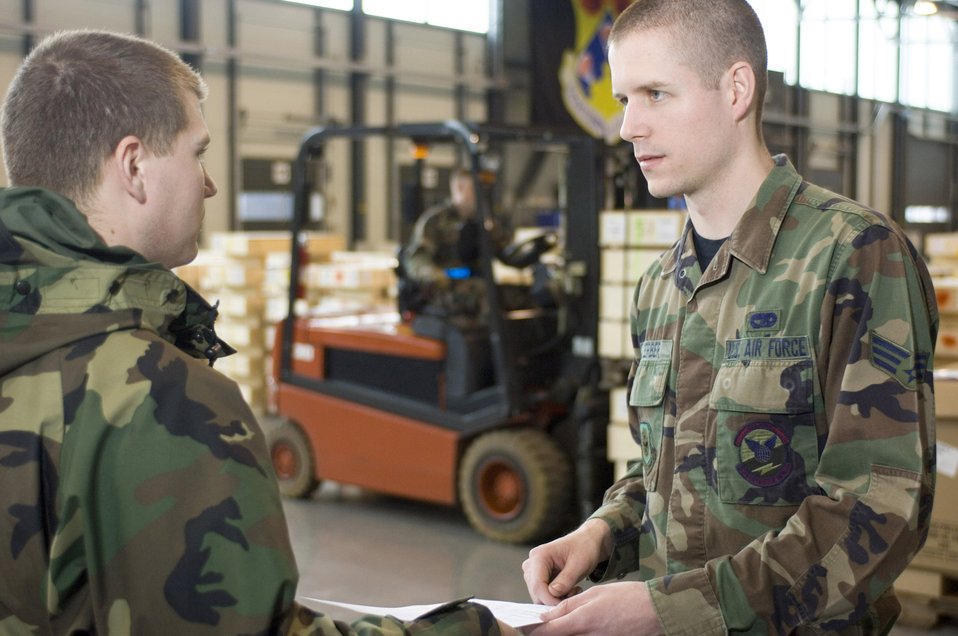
Ramstein airlift mission at full speed

Senior Airman Chad Koerber discusses where to send a load of cargo that arrived by truck with Airman Matthew Flis at Ramstein Air Base, Germany, on Thursday, March 30, 2006. Airman Ballegos, of Warsaw, Kent., and Airman Flis, of Richland, Wash., are cargo processing specialists with the 723rd Aircraft Mobility Squadron.